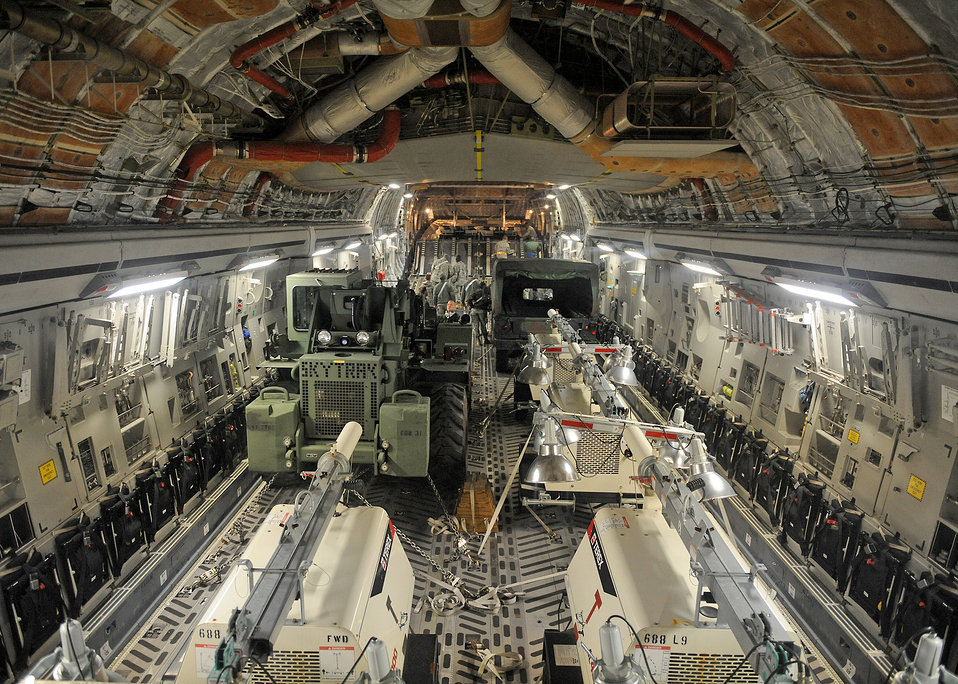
Cross-command communication fuels Haiti relief efforts

Vehicles, equipment, and supplies are shown loaded into the bay of a C-17 Globemaster III Jan. 22, 2010 at Langley Air Force Base, Va., in support of Operation Unified Response.